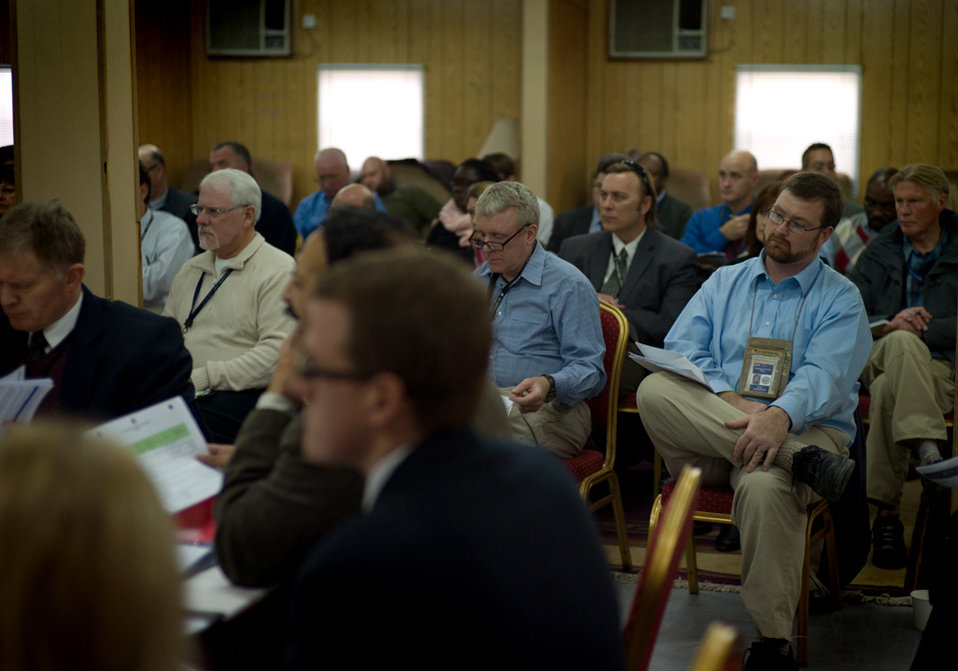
Maitiu, Oheigeartaigh